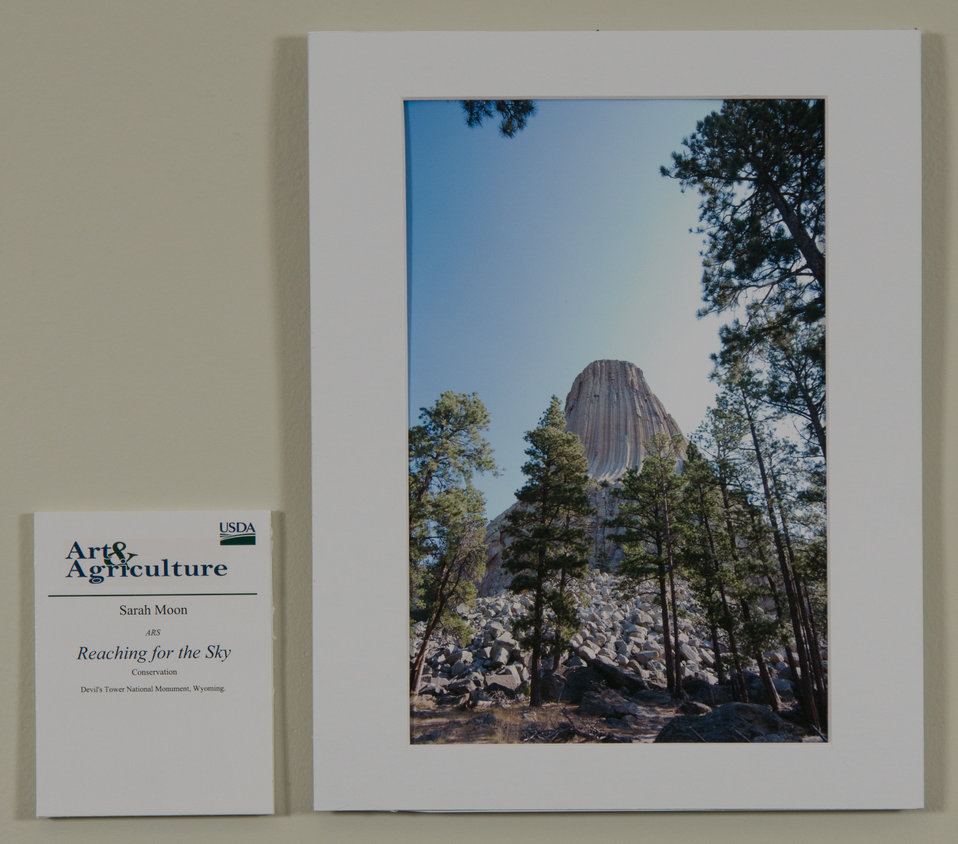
Online Viewer's Choice entries of the 2013 Art & Agriculture, Tuesday, July 9, 2013, in the South Building, Washington, D.C. Themes were expressed by employees from across the department and the contest was open to full-time and part-time USDA employees. Winning artwork will be displayed till the end of the year. U.S. Artistic expression is a creative outlet that is vital for an individual to grow and develop.